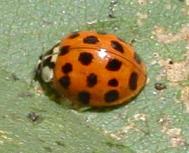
Harmonia axyridis God made this, I simply took the picture. Taken at Lodi Lake in Lodi, CA.